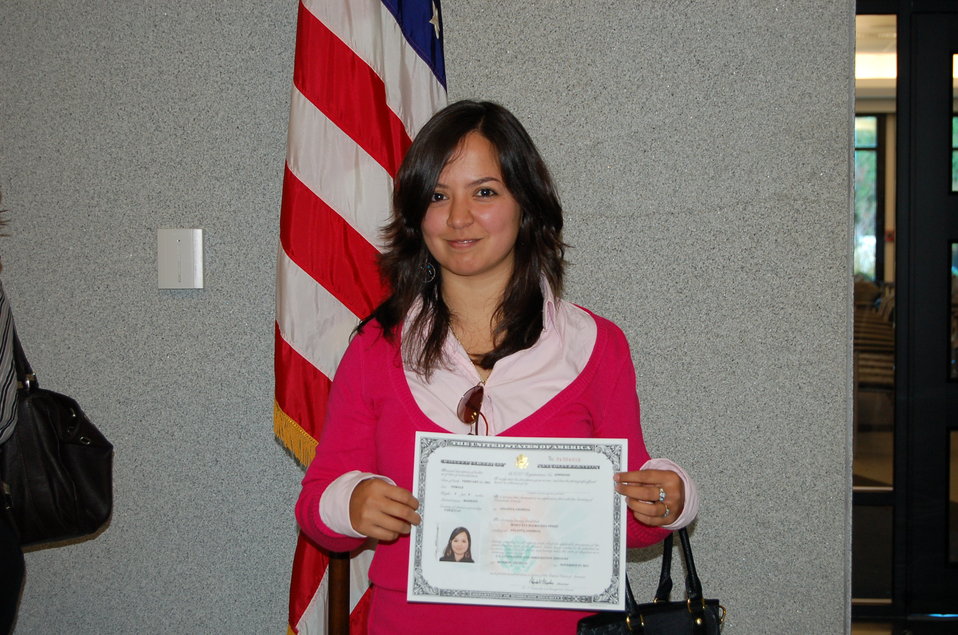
New Citizens